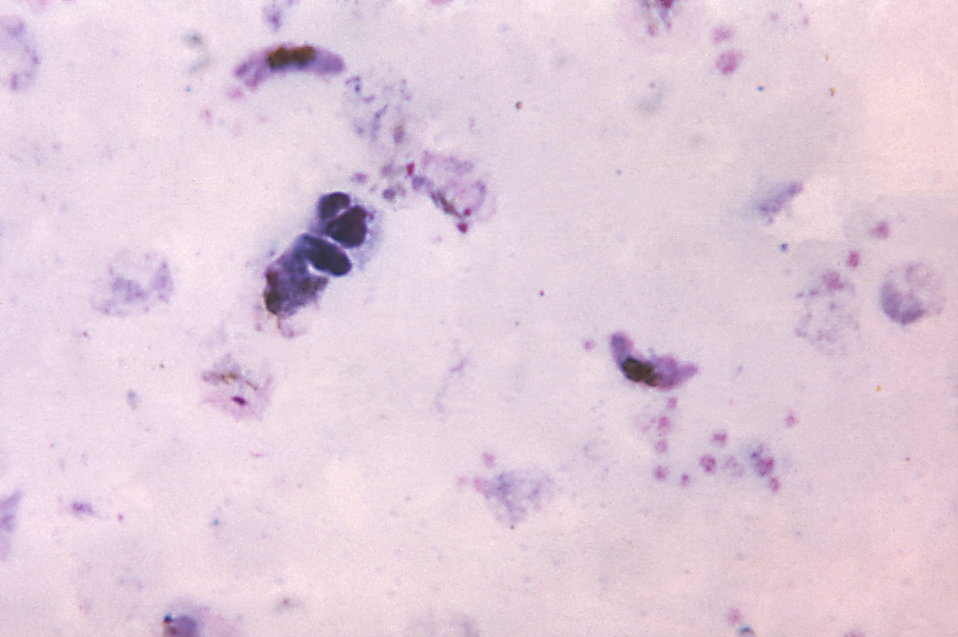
This thick film photomicrograph indicates the presence of a "mixed" Plasmodium spp. infection.